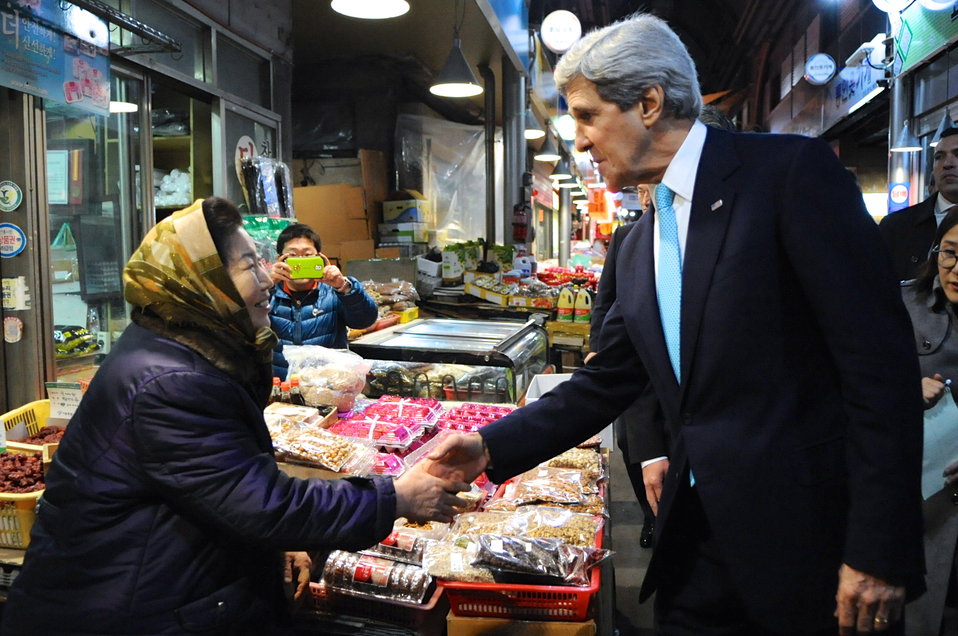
Secretary Kerry Greets South Korean Woman

U.S. Secretary of State John Kerry greets a vendor at the Tong-in Market in Seoul, South Korea, on February 13, 2014, before she told him she planned to soon be reunited with relatives to in North Korea.